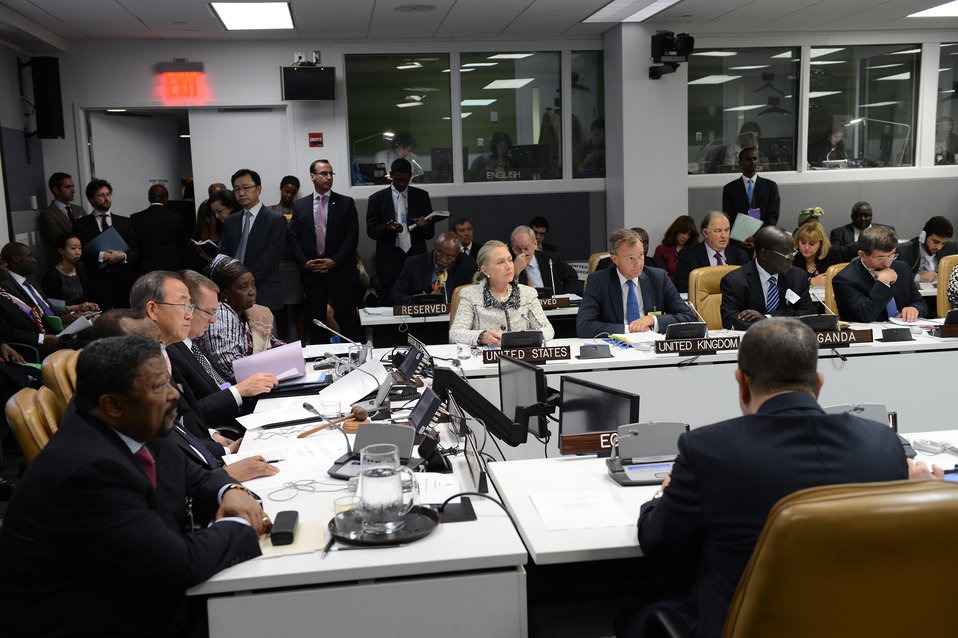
Secretary Clinton Delivers Remarks on Somalia at the United Nations

U.S. Secretary of State Hillary Rodham Clinton delivers remarks on Somalia at the United Nations in New York, New York on September 26, 2012.